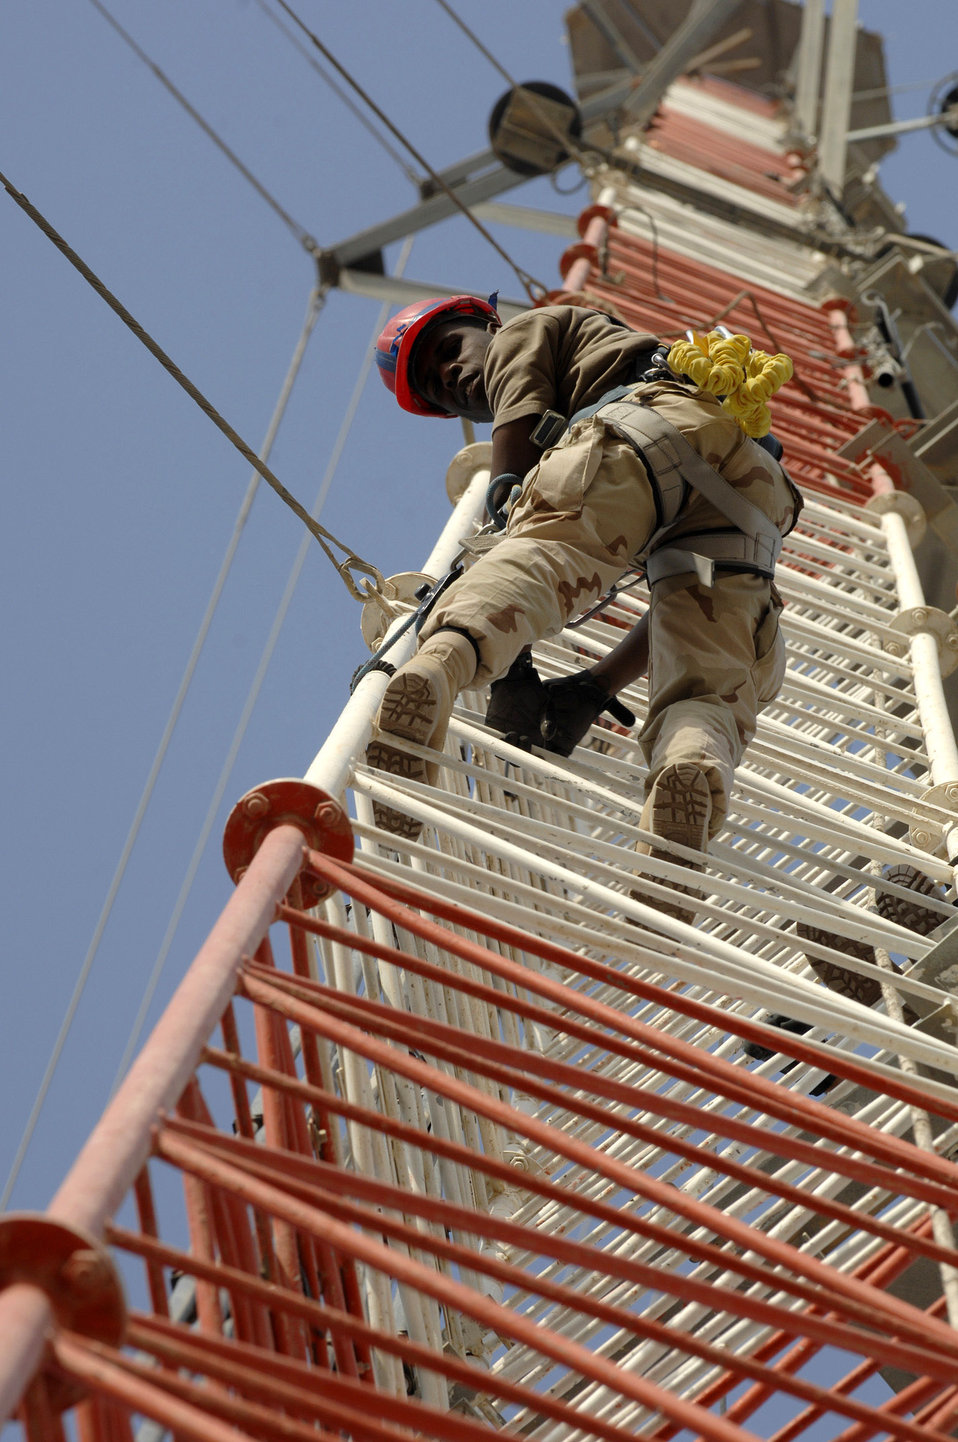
Tower-climbing certification

Senior Airman Lakendrick Fisher climbs up the Radio-over-Internet Protocol Routed network tower Nov. 26 at Ali Base, Iraq. Airmen from the 407th Expeditionary Communications Squadron took an opportunity to get tower-climbing certifications when a team arrived to do preventive maintenance on the RIPRnet. Airman Fisher is deployed from Yokota Air Base, Japan.